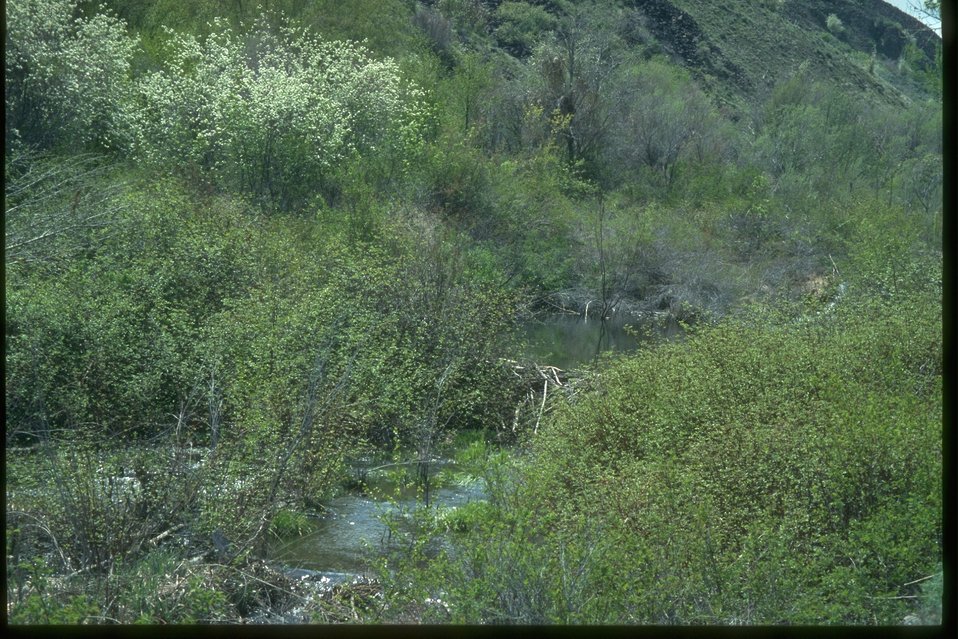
Colockum Creek functioning properly in Central Washington.